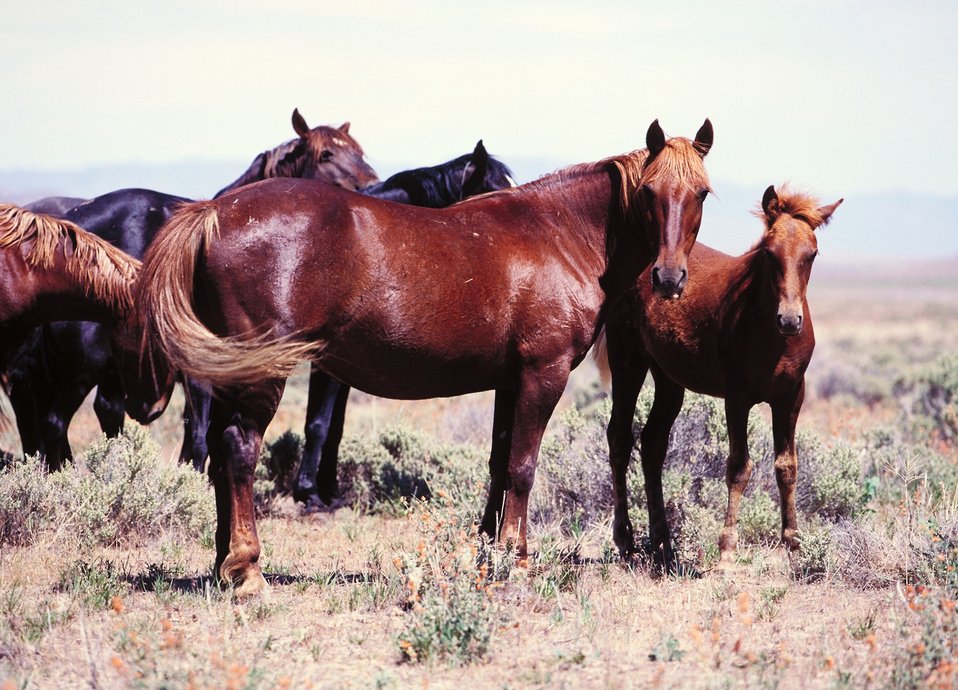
Onaqui Herd near Dugway, Utah.